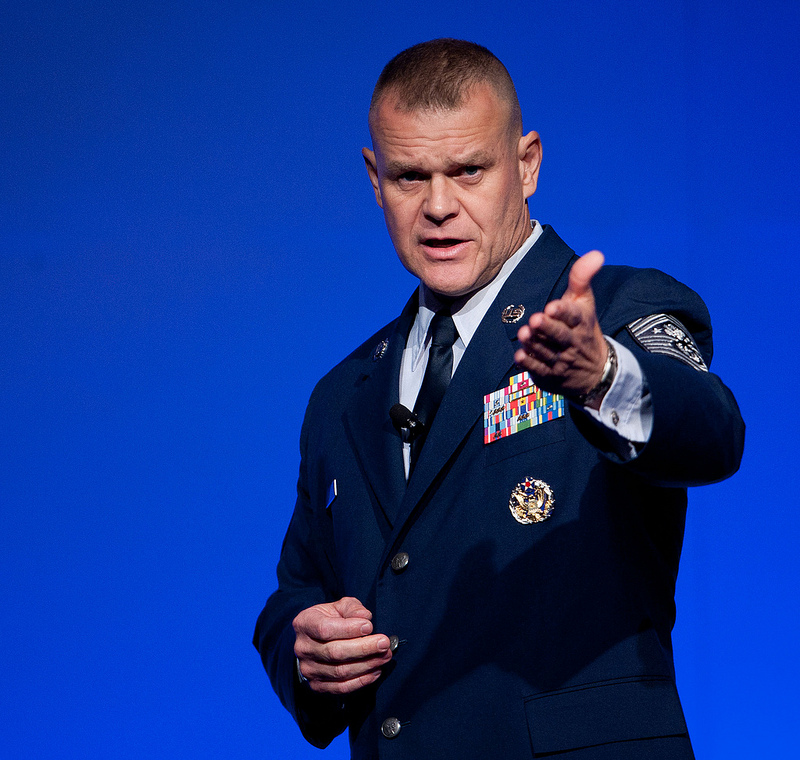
Carrying the message

Chief Master Sgt. of the Air Force James Roy's primary responsibilities are to ensure enlisted Airmen are properly trained and equipped to perform their missions and to advise the secretary and chief of staff of the Air Force on enlisted matters. The position was created in 1967, with then-Chief Master Sgt. of the Air Force Paul W. Airey being the first CMSAF.